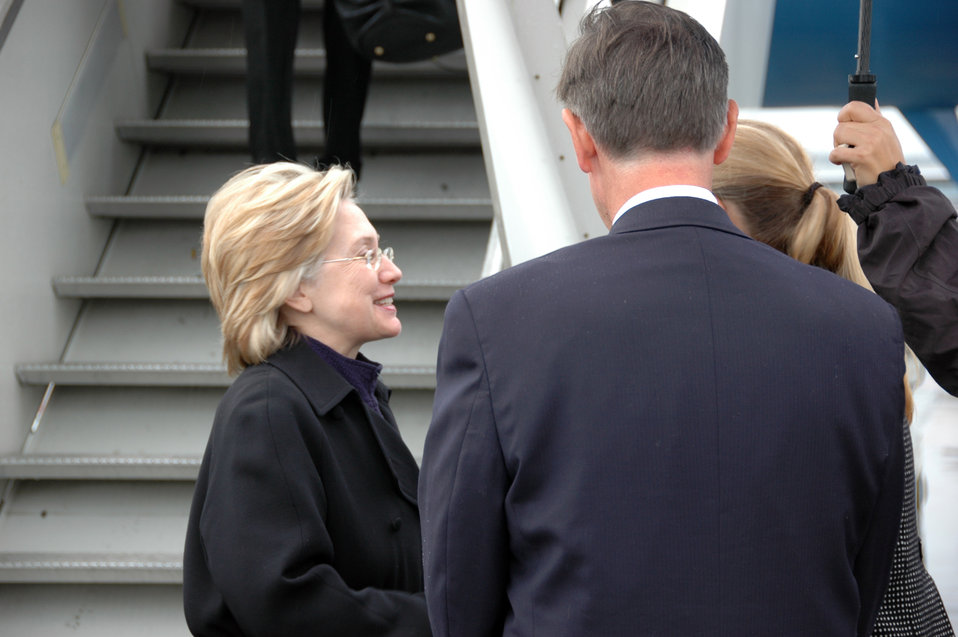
Secretary Clinton Arrives in Zurich

U.S. Secretary of State Hillary Rodham Clinton is greeted by U.S. Ambassador to Switzerland Donald S. Beyer and Ms. Alexandra Baumann (Federal Department of Foreign Affairs) during her arrival in Zurich, Switzerland October 9, 2009.